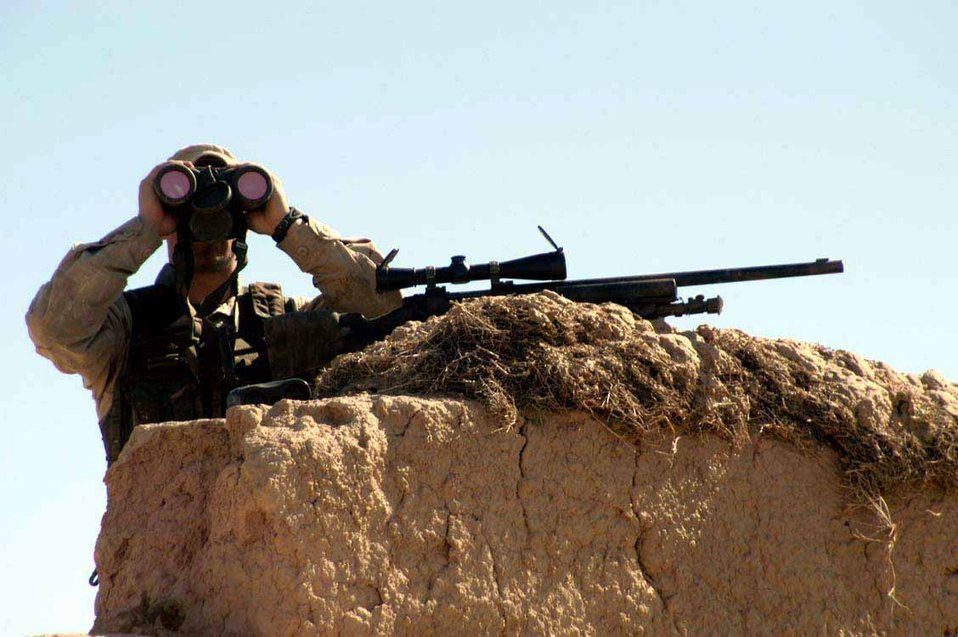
Keeping a watchful eye

OPERATION ENDURING FREEDOM -- Airman 1st Class Brandon White scans the horizon for potential adversaries atop a wall in the city of Qal'eh-ye Musa Pa-in, Afghanistan, on March 12 during a special delivery to the village. White, who is deployed from Moody Air Force Base, Ga., was on the wall as part of a security detail as 20 airmen delivered more than 750 pounds of school supplies, clothing, shoes and food to about 50 families. The donations were mailed to airmen from friends, relatives and church groups. The airman is a fire team member assigned to the 455th Expeditionary Security Forces Squadron.